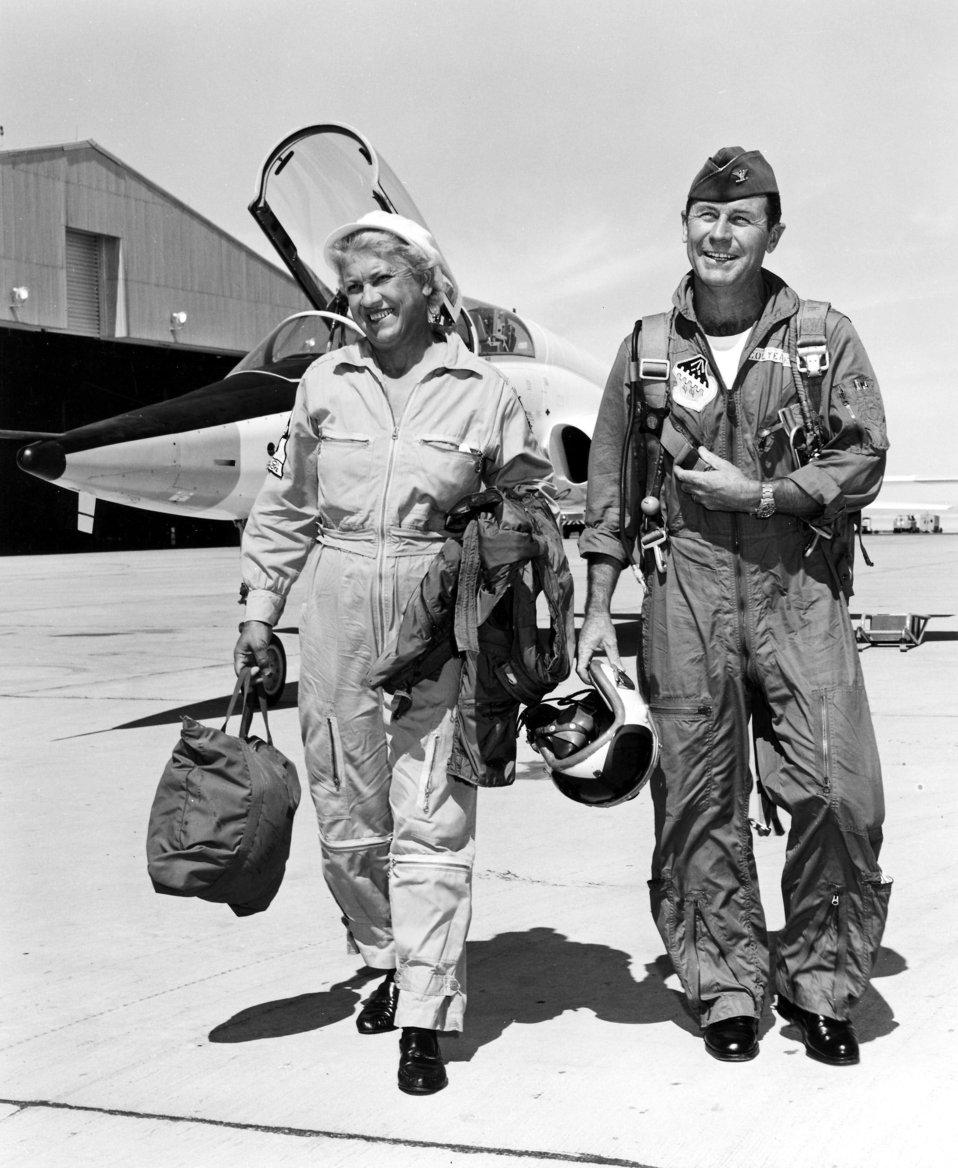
Friendship

EDWARDS AIR FORCE BASE, Calif. -- Jackie Cochran and Col. Chuck Yeager walk away from an aircraft after a flight in 1962. Their friendship lasted until her death in 1980.